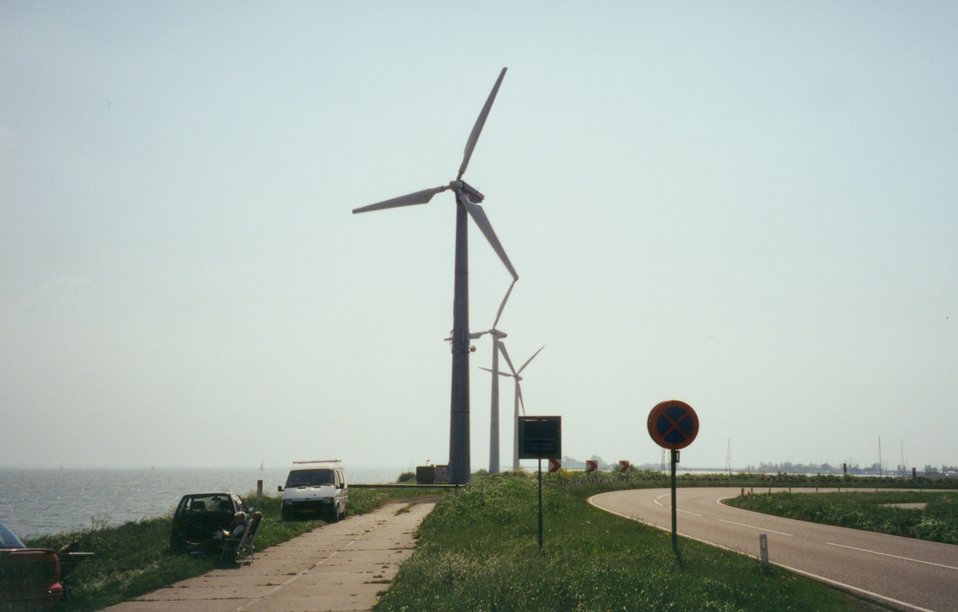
Wind power as practiced in the Twenty-first Century. A series of electricity generating windmills making use of available space.